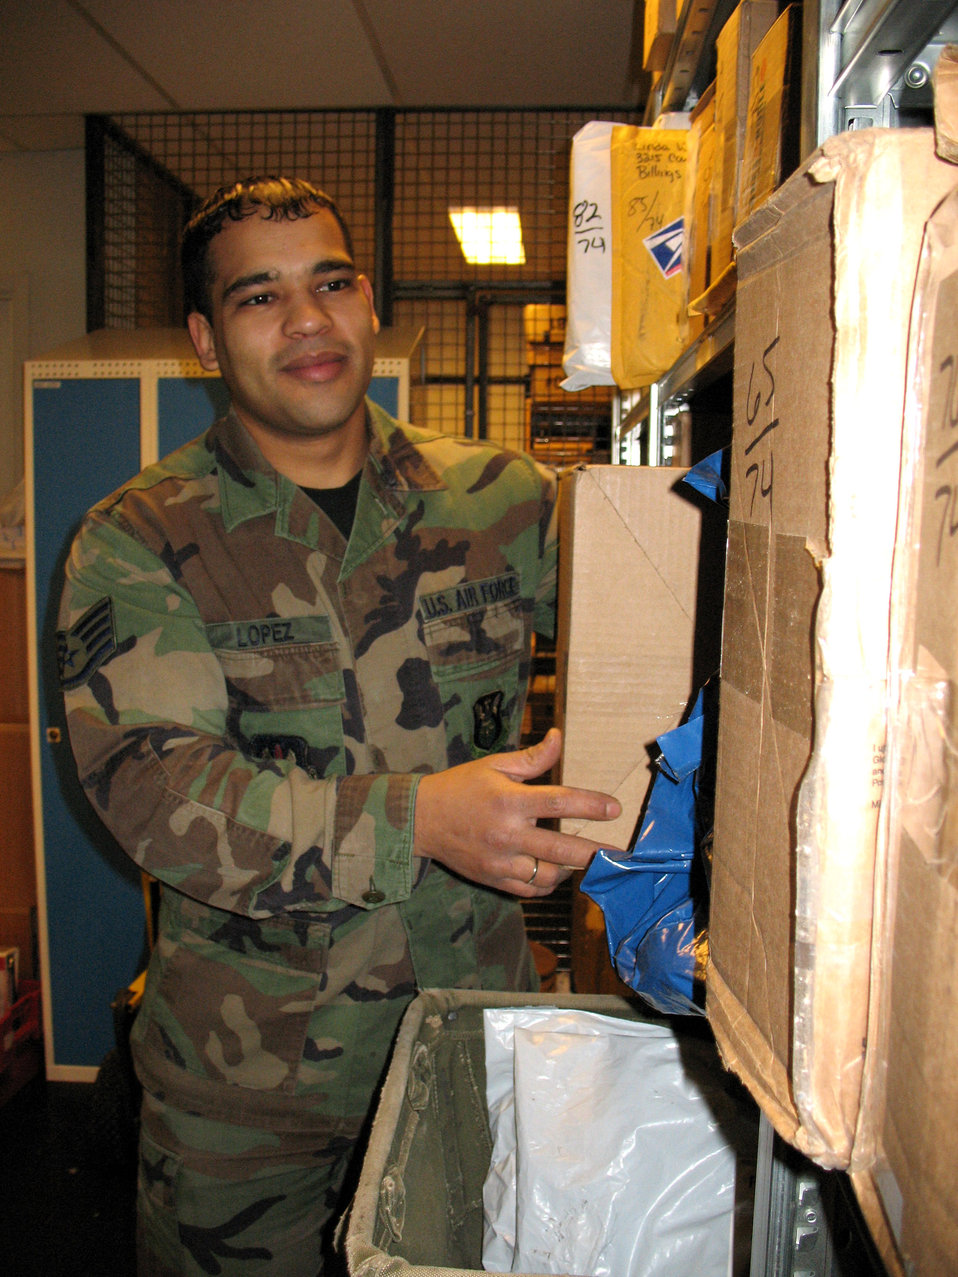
Airmen in Norway contribute to NATO mission

Staff Sgt. Tony Lopez stocks packages in the post office in March at Stavanger Air Base, Norway. Sergeant Lopez is the only Airman working in the post office supporting U.S. forces, civilians, and some NATO allies who work in the Joint Warfare Center and the 426th Air Base Squadron. Since most jobs in the squadron are only one-deep positions, other people help Sergeant Lopez with the mail.